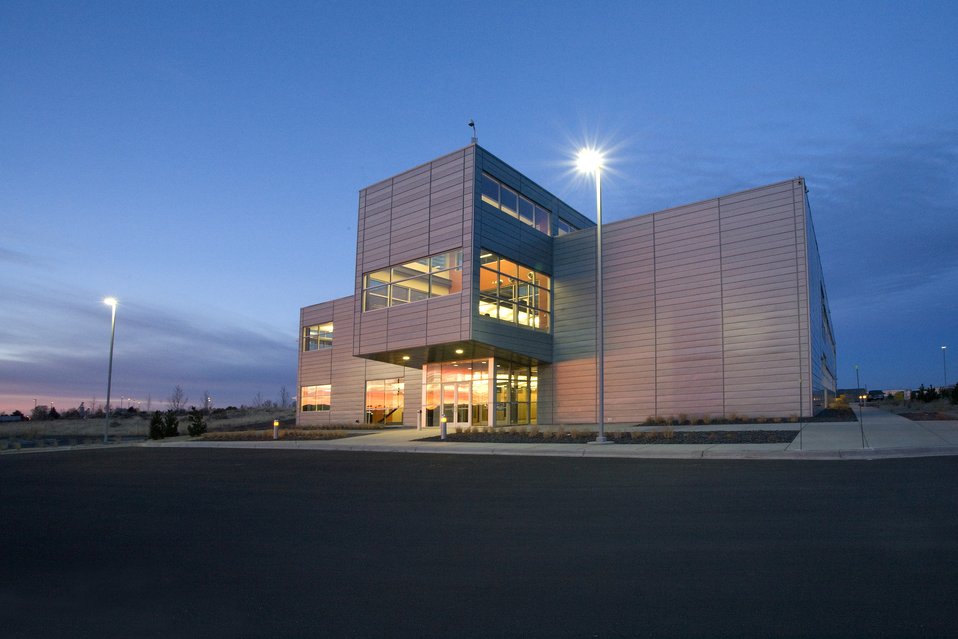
The Center for Advanced Energy Studies is a partnership between the U.S. Department of Energy, Idaho National Laboratory and the state of Idaho through its three research universities.